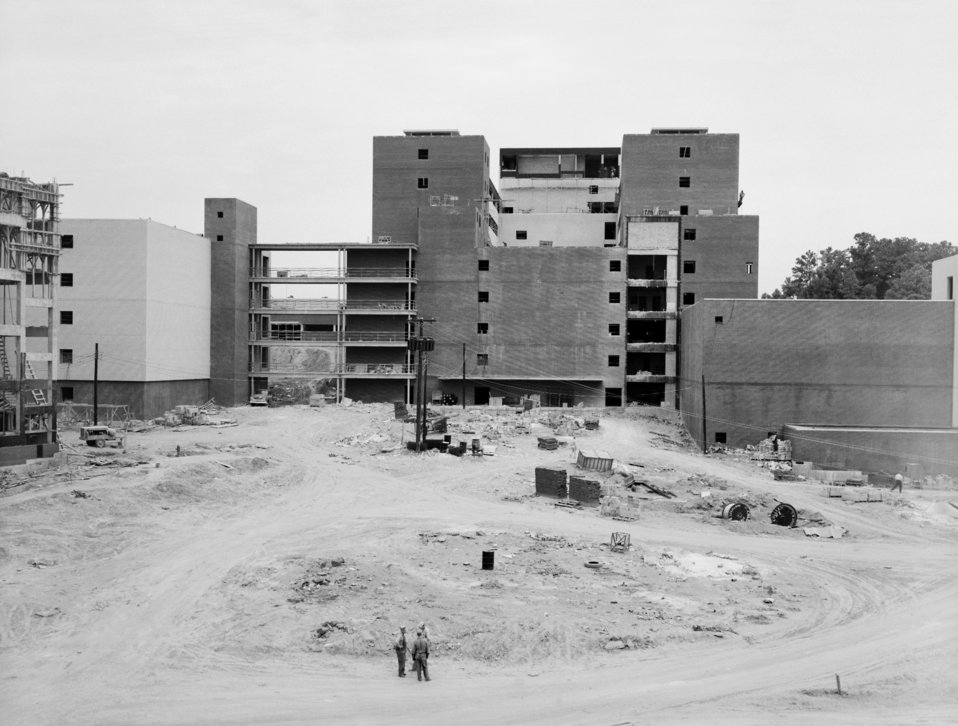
The CDC Clifton Road Roybal Campus, Atlanta, GA. while under construction in 1959.